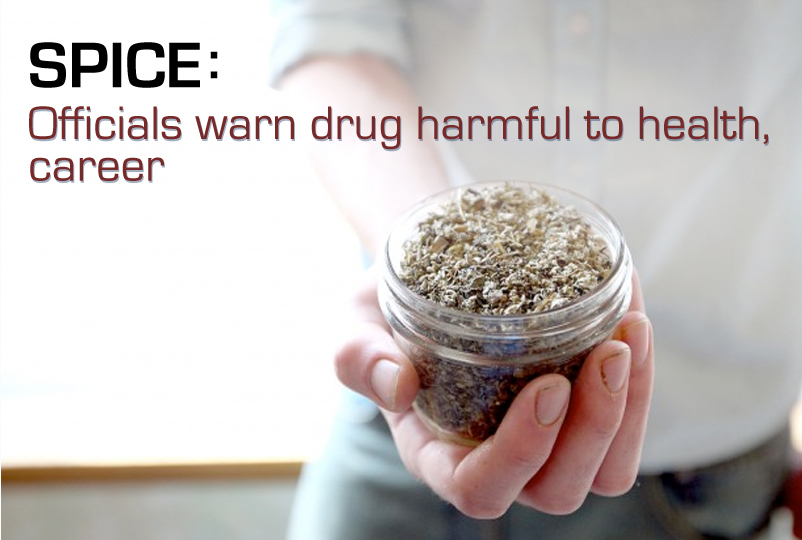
Air Force officials warn: 'spice' harmful to health, career